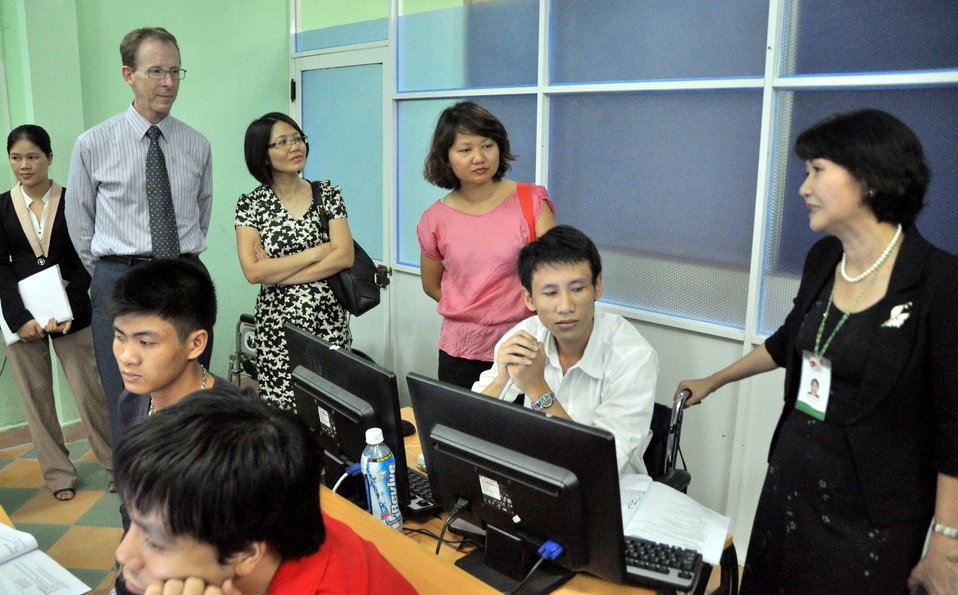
USAID Visits IT Training Program for People with Disabilities at Dong A University

Danang, Vietnam
July 17, 2013